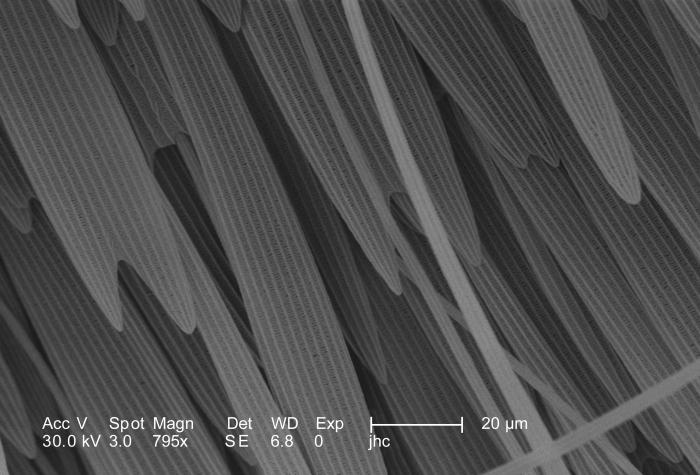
In this scanning electron micrographic (SEM) view of an unidentified white moth's exoskeletal surface, under a relatively low magnification of 795X, some of the ultrastructural details found in the construct of its scales was revealed. This moth, discovered deceased in the Decatur, Georgia suburbs, was a member of the Phylum Arthropoda, Order Lepidoptera. At this level of magnification the diaphanous structure of these scales could be appreciated, bringing to life the incredible microscopic beauty, which goes unseen, but is abundant all around us. For another, highly magnified view revealing the proximal end of a single scale, as it inserted into the exoskeletal surface, see PHIL 9841.